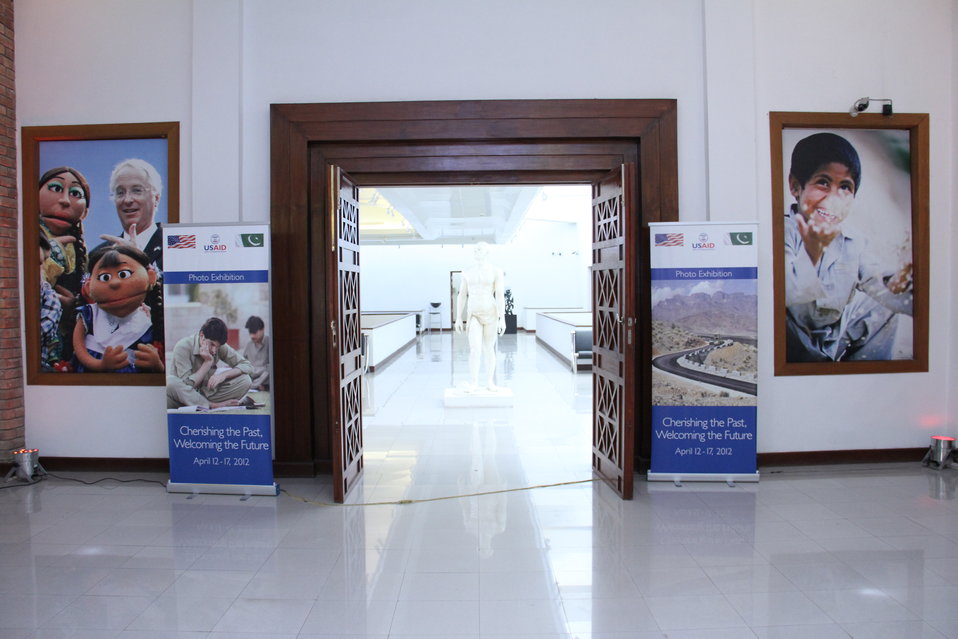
Photo Exhibition Celebrate US-PAK Cooperation at PNCA, Islamabad on April 13, 2012